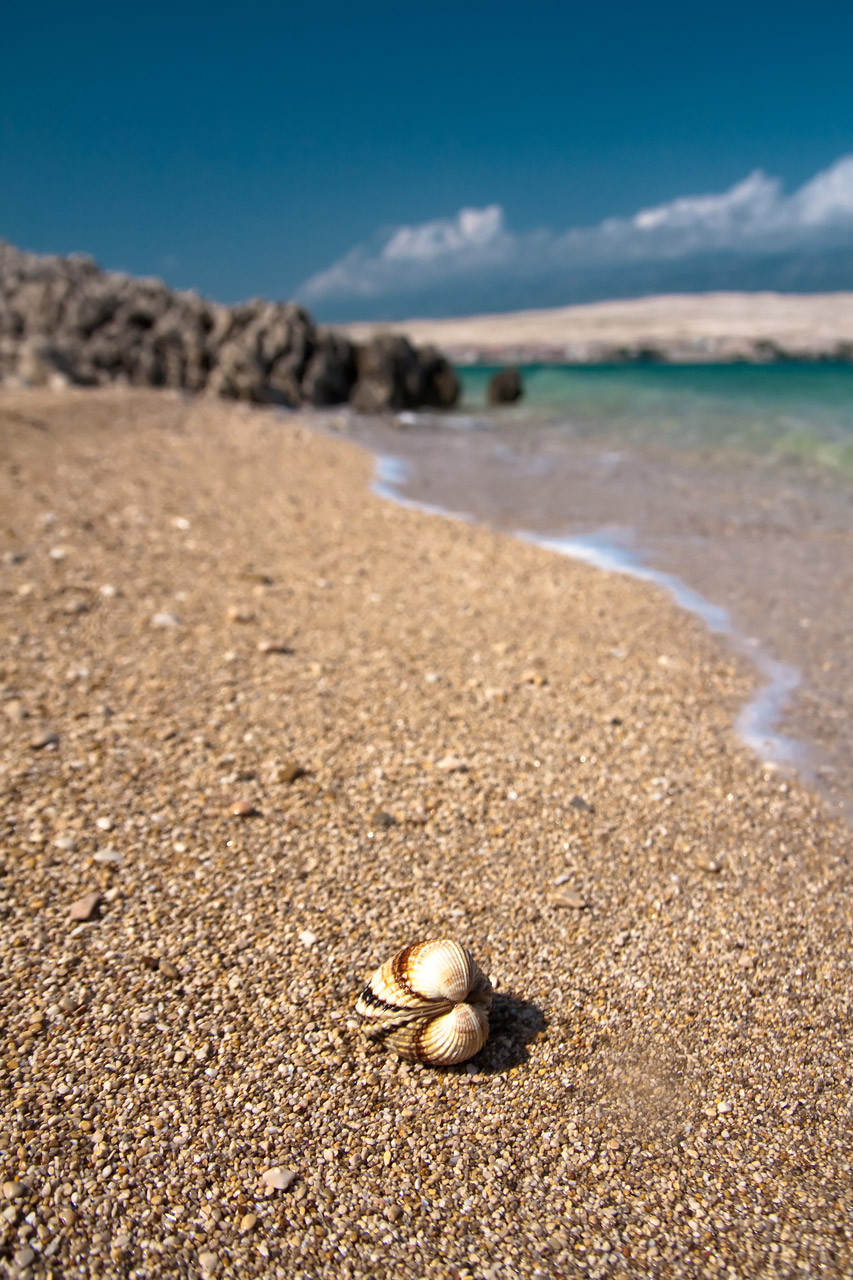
Shell on beach of tiny rocks, next to the sea in adriatic.